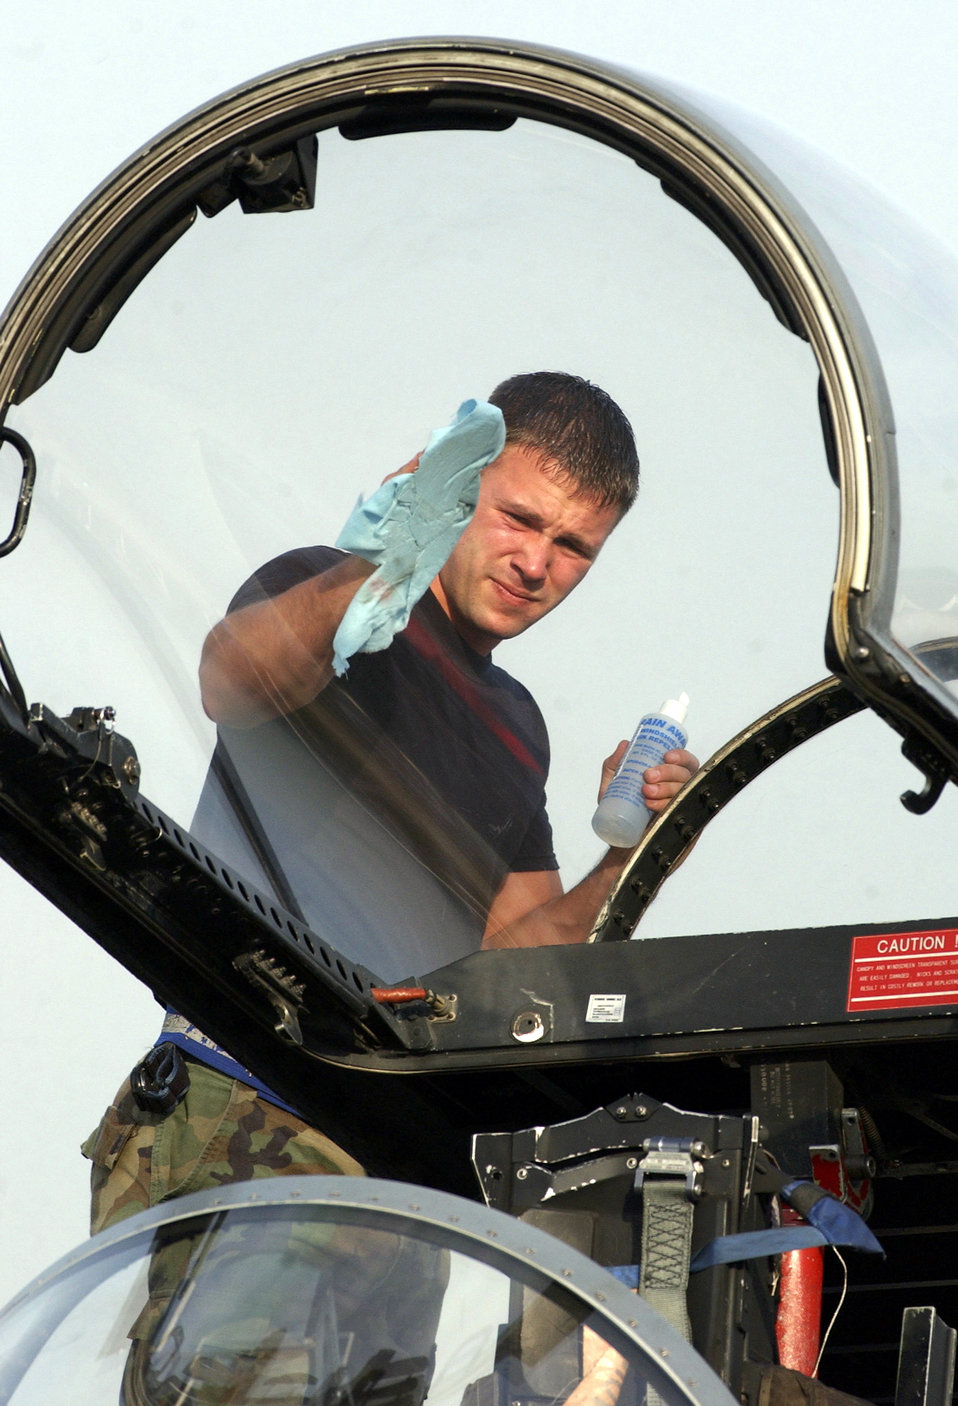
Cope India '04

GWAILOR AIR FORCE STATION, India -- Senior Airman Joshua Frederick cleans an F-15 Eagle canopy following the day's missions here Feb. 18 during Cope India 04. About 150 airmen are deployed for the dissimilar air combat exercise between the U.S. and Indian air forces in more than 40 years. Airman Frederick is assigned to the 19th Aircraft Maintenance Unit from Elmendorf Air Force Base, Alaska.